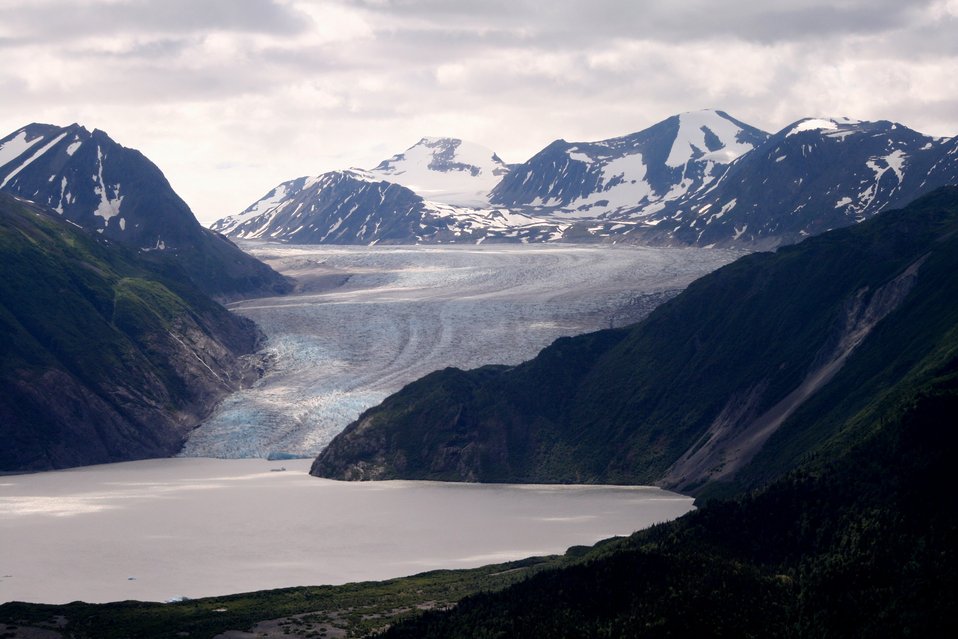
Skilak Glacier, Kenai National Wildlife Refuge, AK

Photo: Matthew Strausser, USFWS
2011 Wilderness Fellow